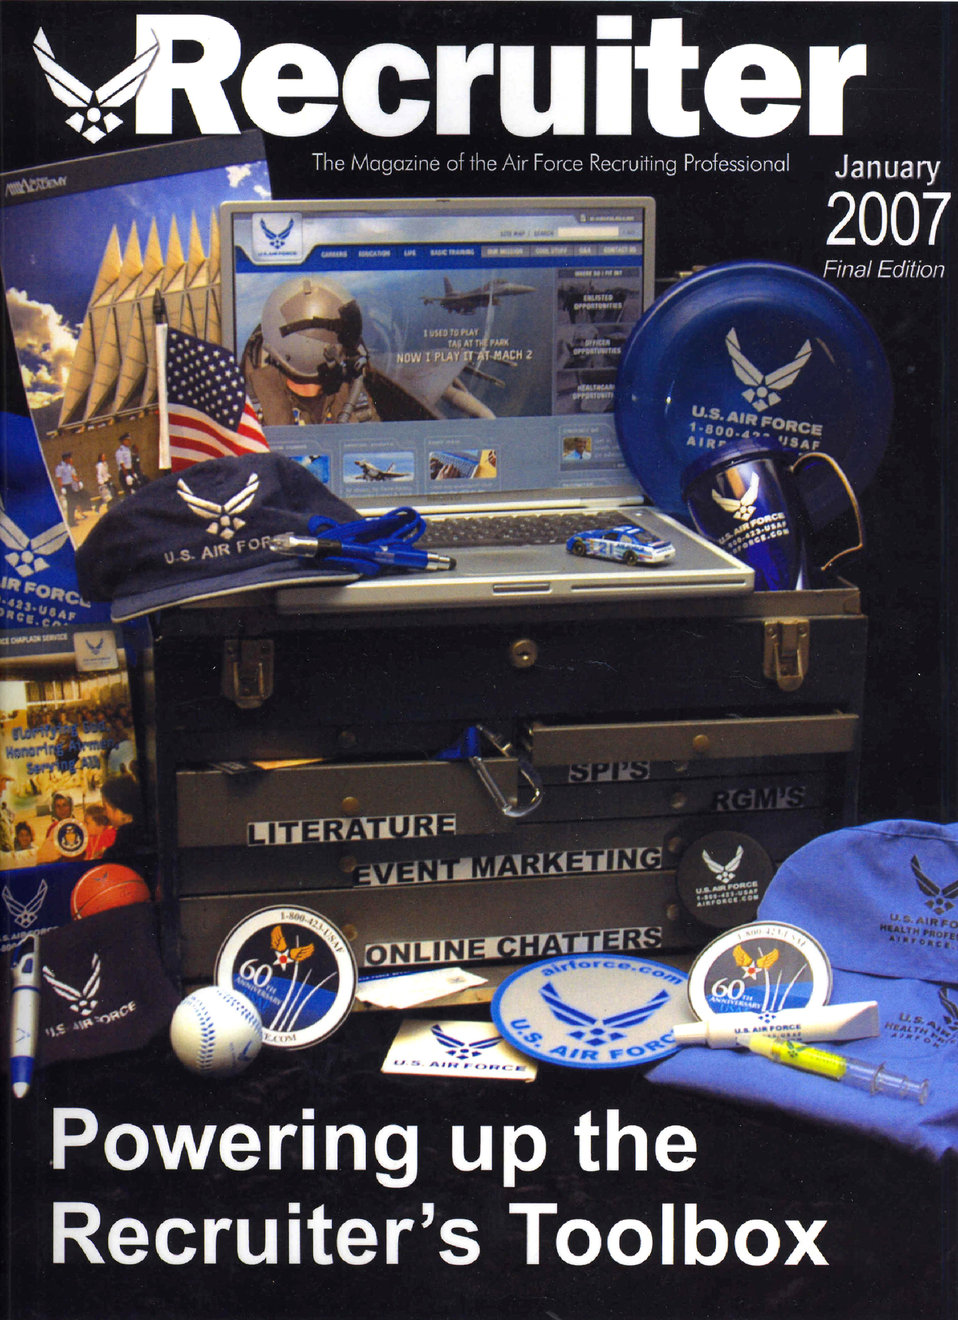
Recruiter magazine bids farewell, goes online

The last edition of the Recruiter magazine will be published in January 2007. The publication will no longer be printed and will be available at the Air Force Recruiting Service's Web site.